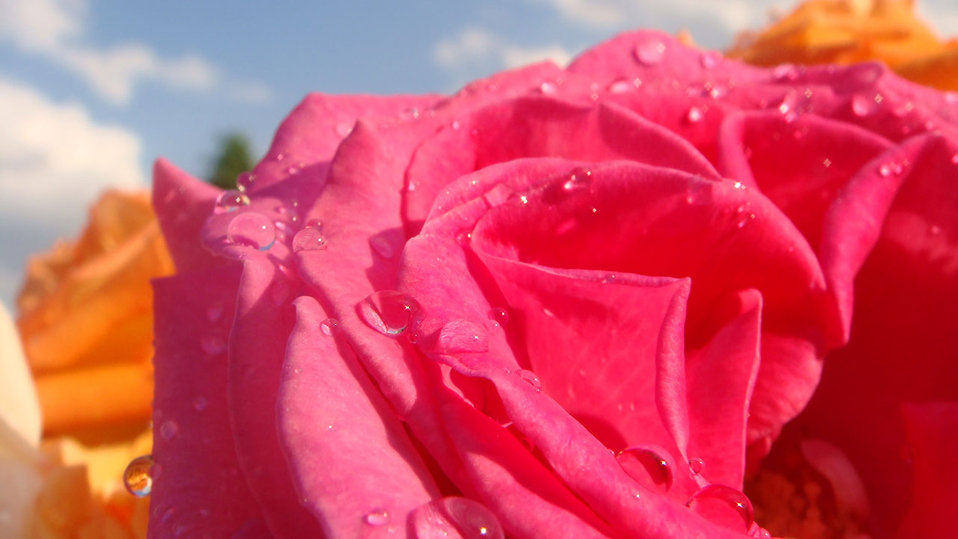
Flower

Beautiful flower with water drops in the sun.